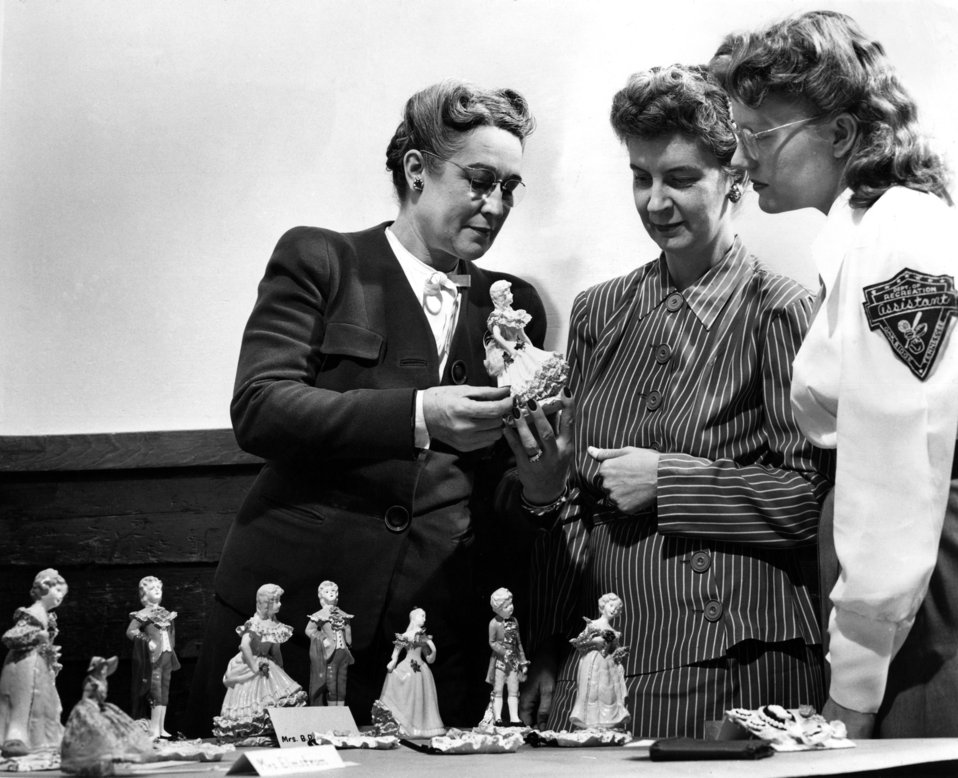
Art and Craft Exhibit Oak Ridge

4397-1 DOE photo Ed Westcott 3-18-1947 l to r Mrs. Carlton Marsh, Mrs. Herbert Mack, and Mrs. Ruth W. Gaster Oak Ridge Tennessee